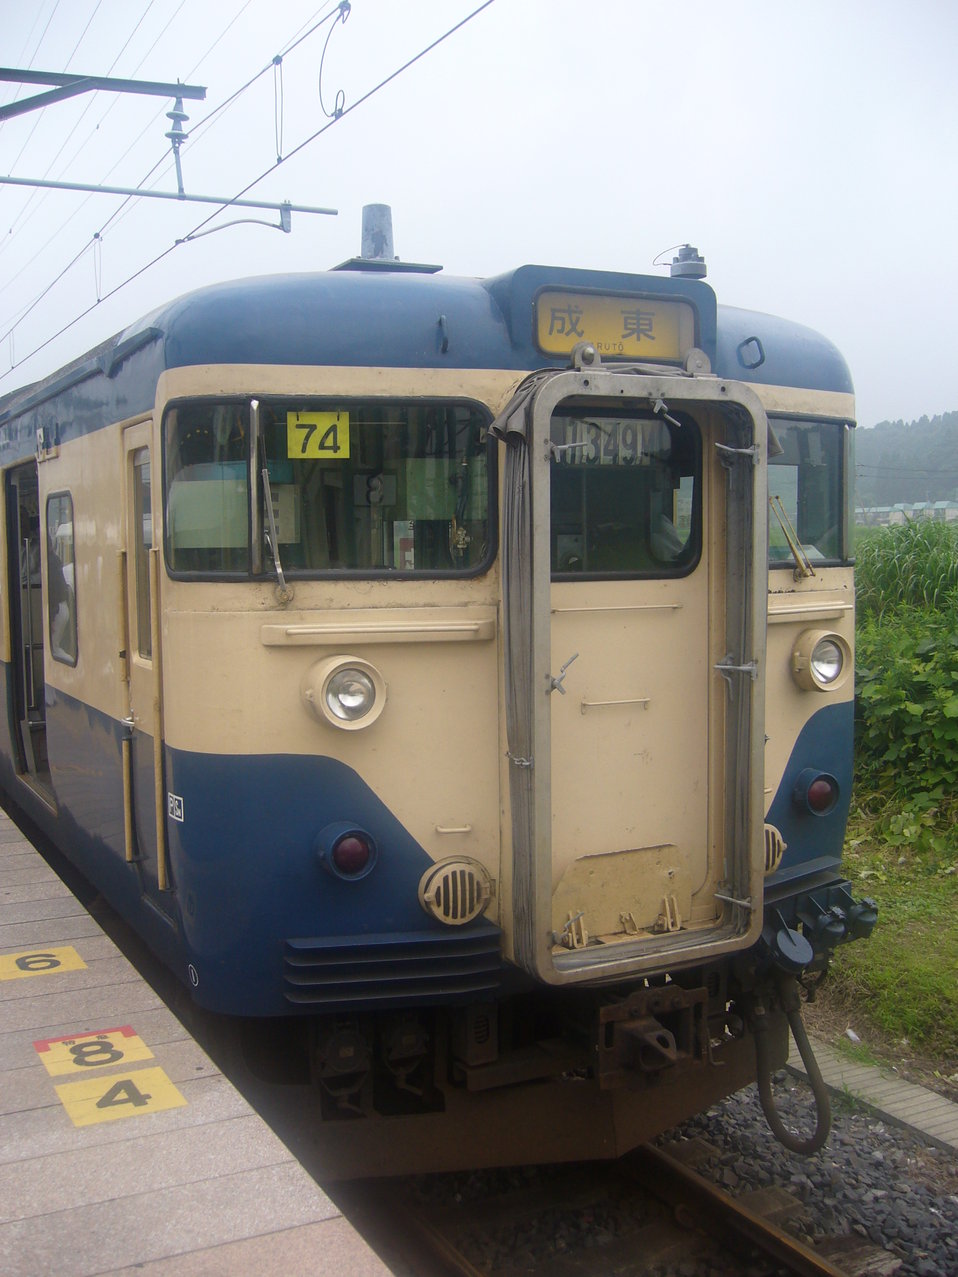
Taken at en:Naruto Station, en:Sobu Line A picture of JR en:113 series train with Yokosuka color. en:Category:JR East rolling stock images